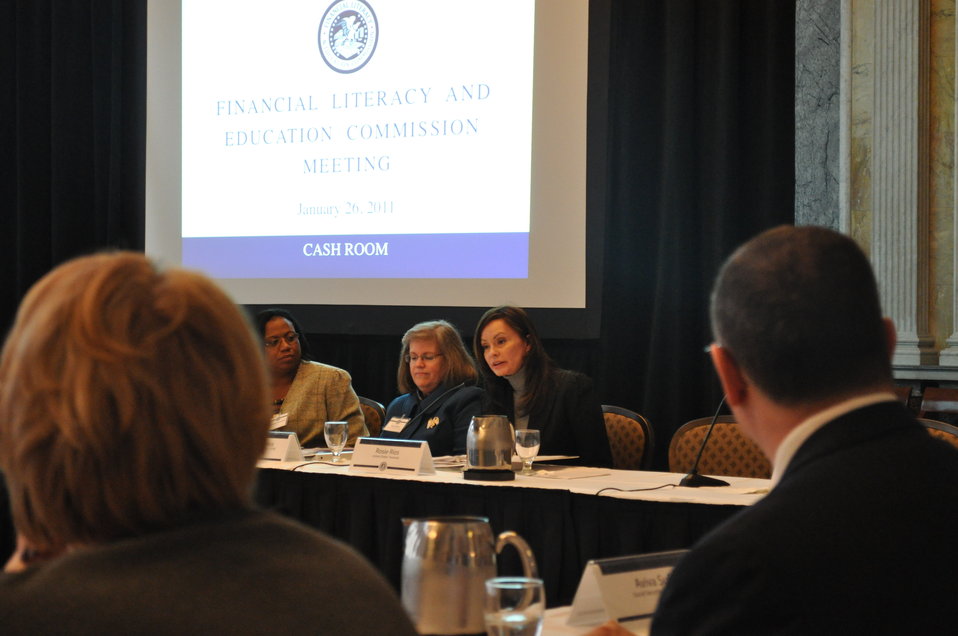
Financial Literacy and Education Commission, 01/26/2011

Treasurer of the United States Rosie Rios opened today's Financial Literacy and Education Commission meeting which is held quarterly at the Treasury Department.